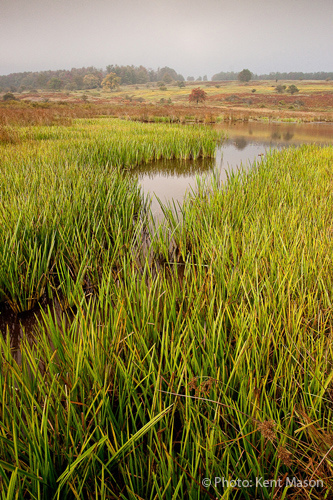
Glade Run Autumn